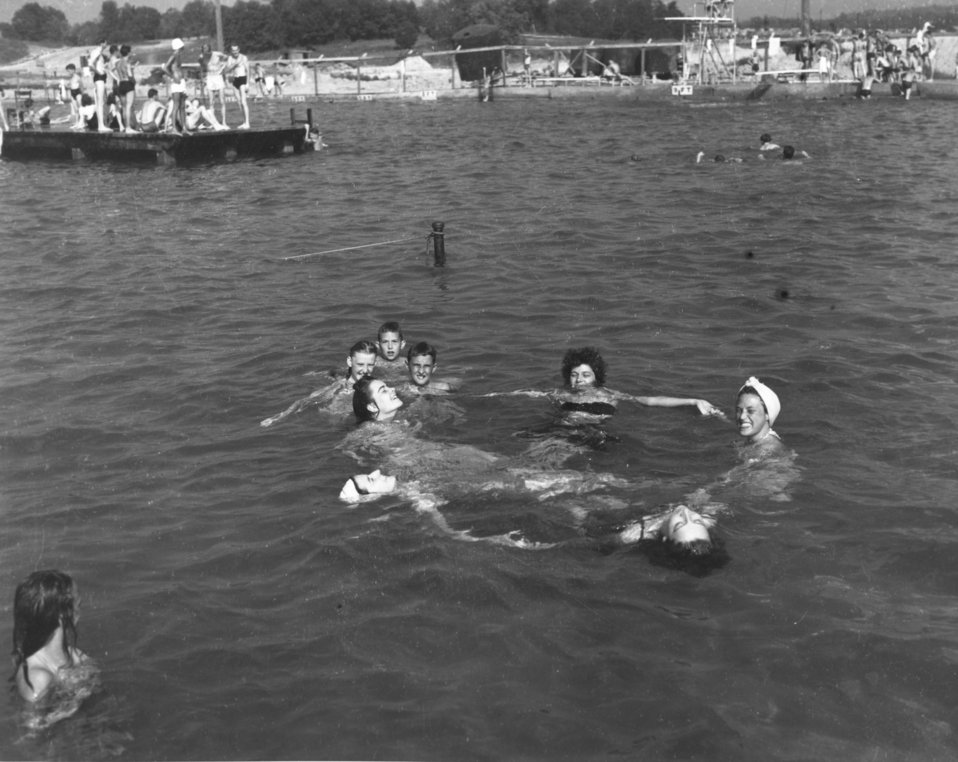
Recreation at Oak Ridge